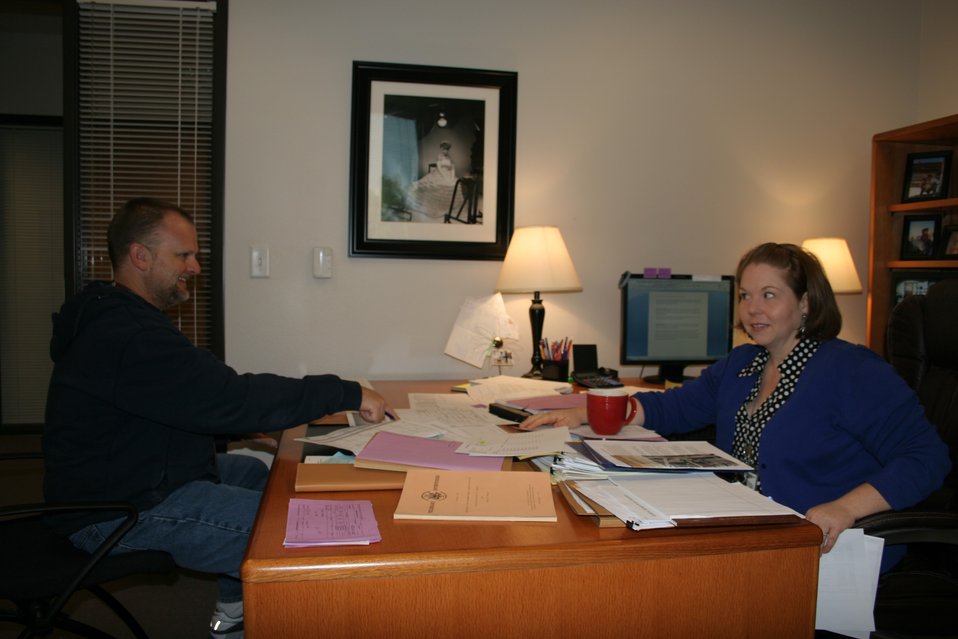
Archivist Randy Thompson presents a processing plan to the Director, Gwen E. Granados; Location: National Archives at Riverside, Perris, CA